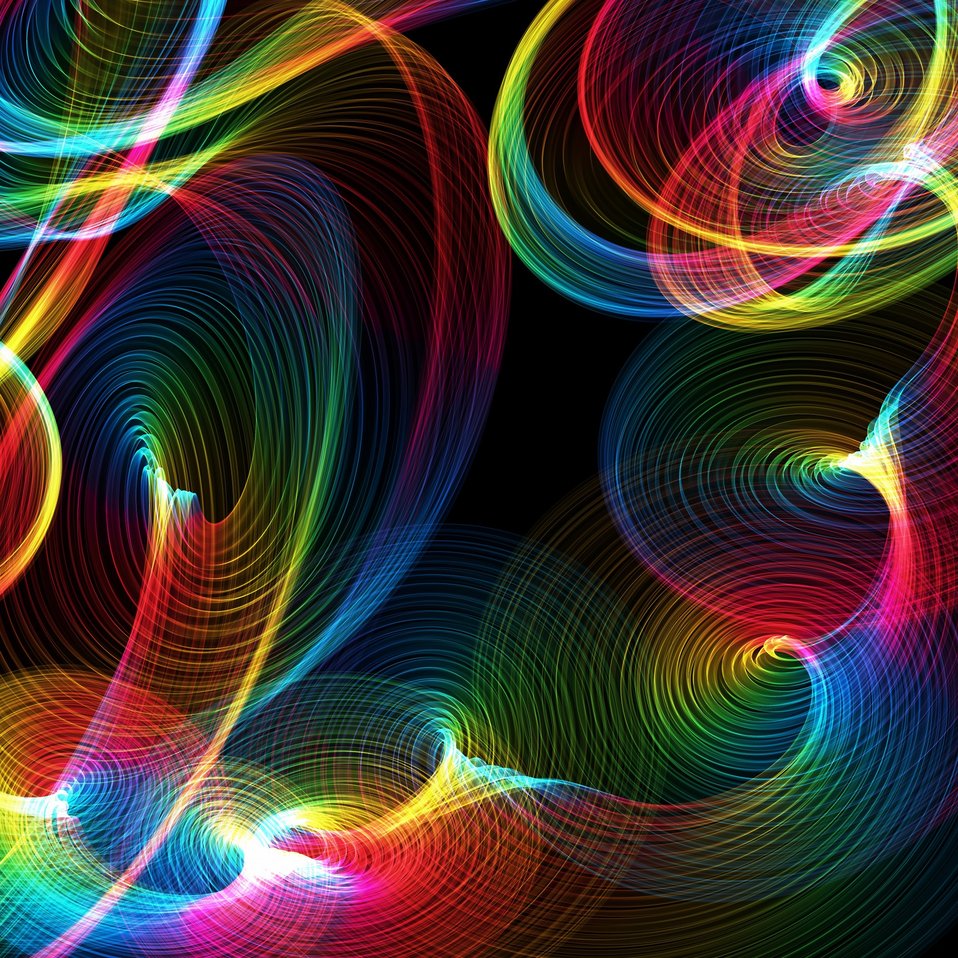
Abstract rainbow twirls

Digitally created clipart illustration of an abstract background pattern with rainbow colours and swirling shapes..